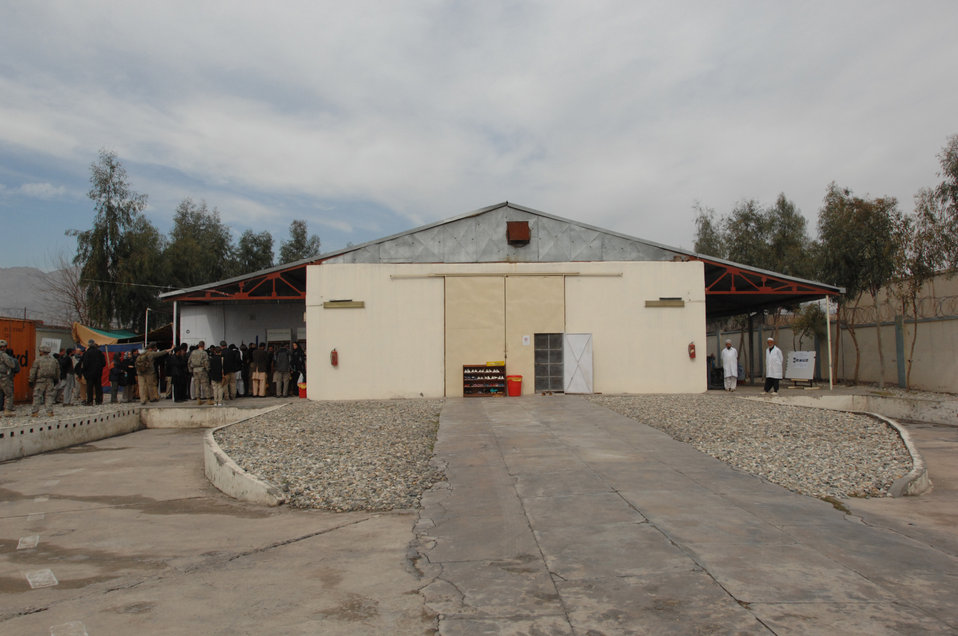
110209sv Shah268

The Surkh Rod vegetable packing facility in Surkh Rod, Nangarhar Province, on Wednesday, February 9, 2011. (S.K. Vemmer/Department of State)